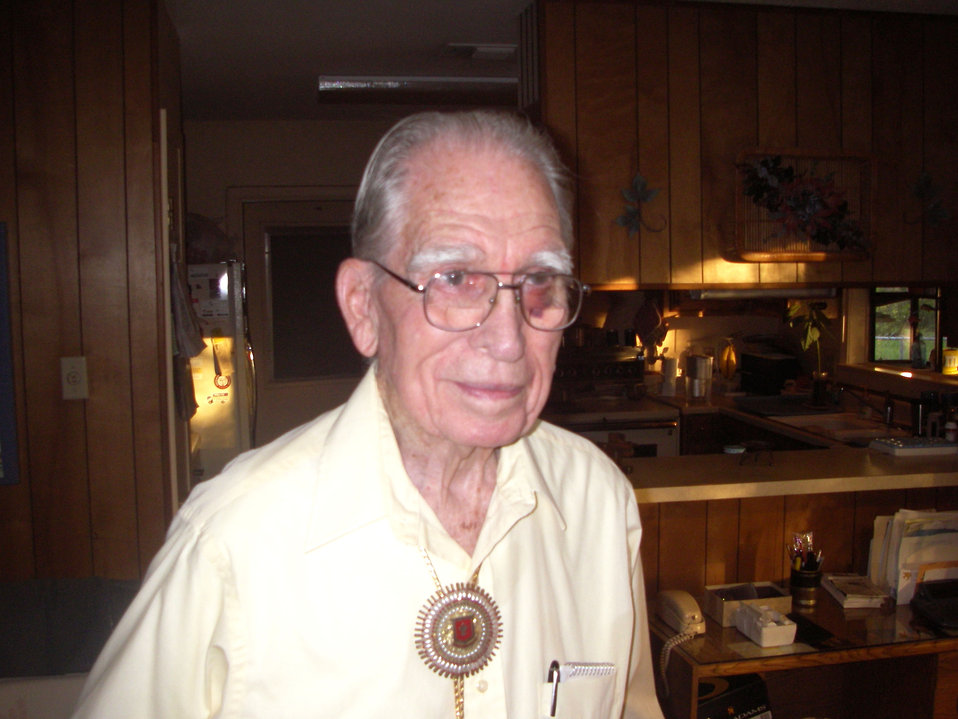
Former POWs carry on American resolve

Roger White Jr., with the Texas Army National Guard's 2nd Battalion, 131st Field Artillery, was captured by Japanese forces March 8, 1942, while stationed on the island of Java in the Netherland East Indies. He spent the next three and a half years in POW camps, mostly in Camp Fukuoka No. 2, Japan, until the camp was liberated in August 1945.